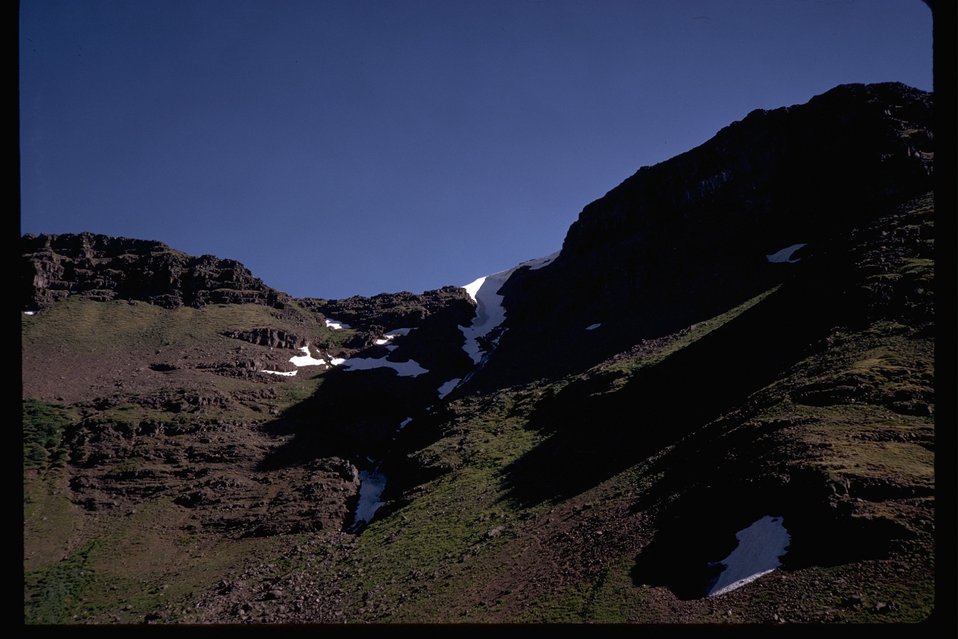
Part of the Little Blitzen Head Wall, Steens Mountain.